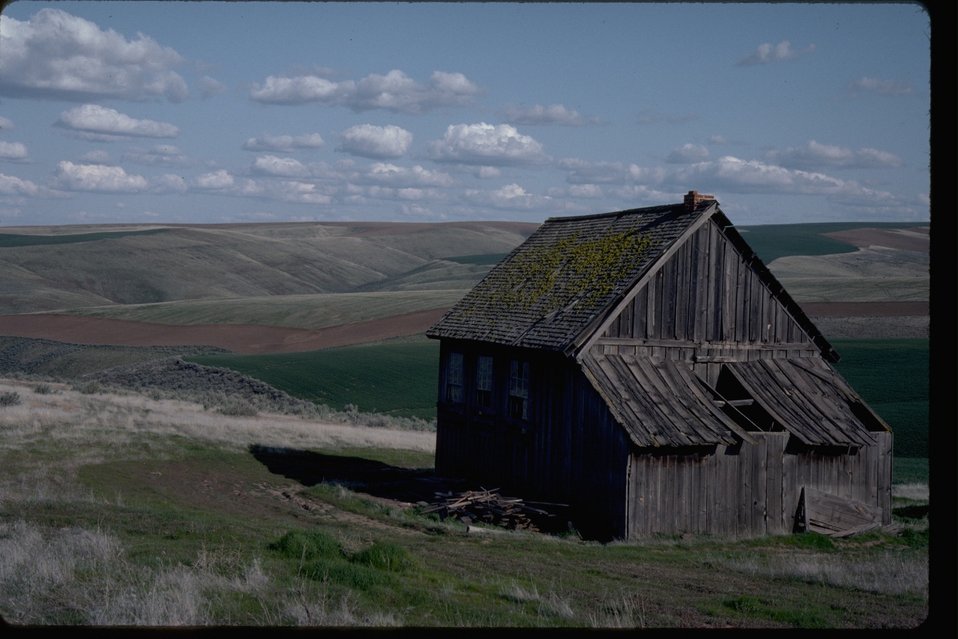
Old school house located in rangeland and farmland.